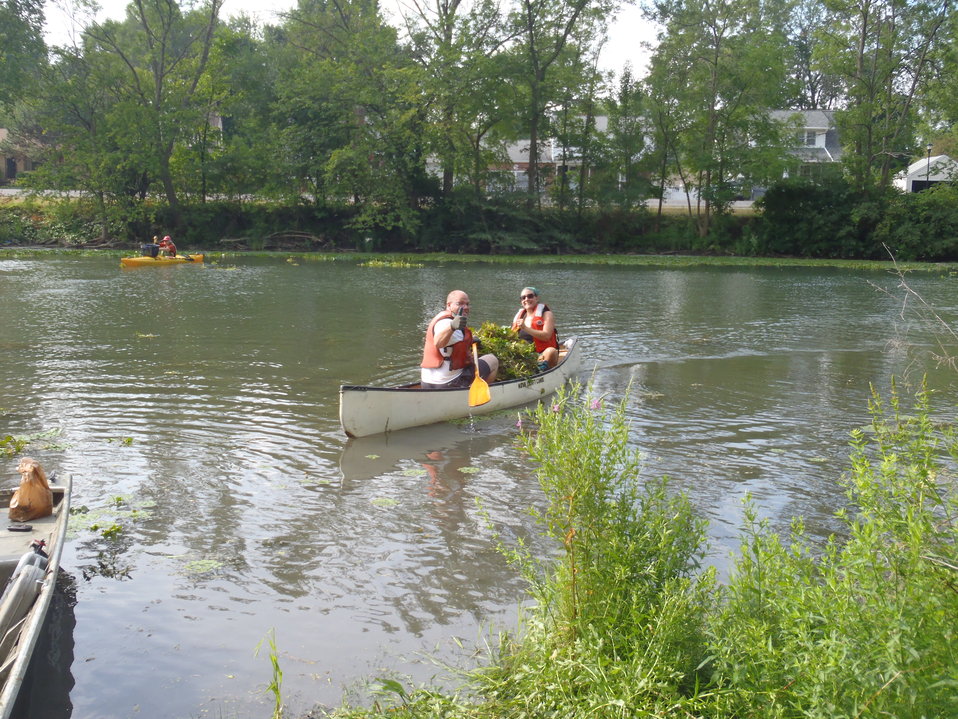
Water Chestnut Volunteers

Two volunteers of the Lower Great Lakes FWCO return to shore with a canoe filled with hand-pulled water chestnut in 2011.